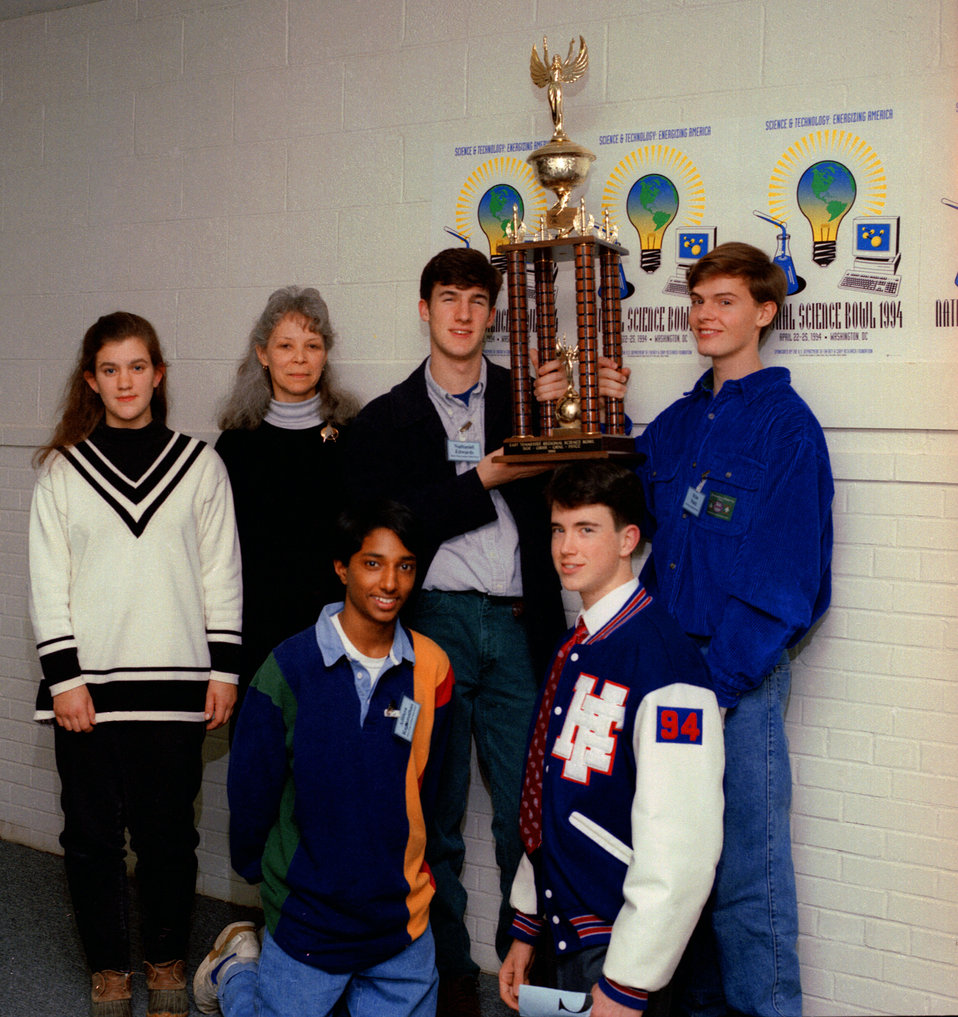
National Science Bowl Hume Fogg Academic High School Maryville Tennessee

94-111 DOE photo Lynn Freeny 1994 Pellippissi State Maryville Tennessee